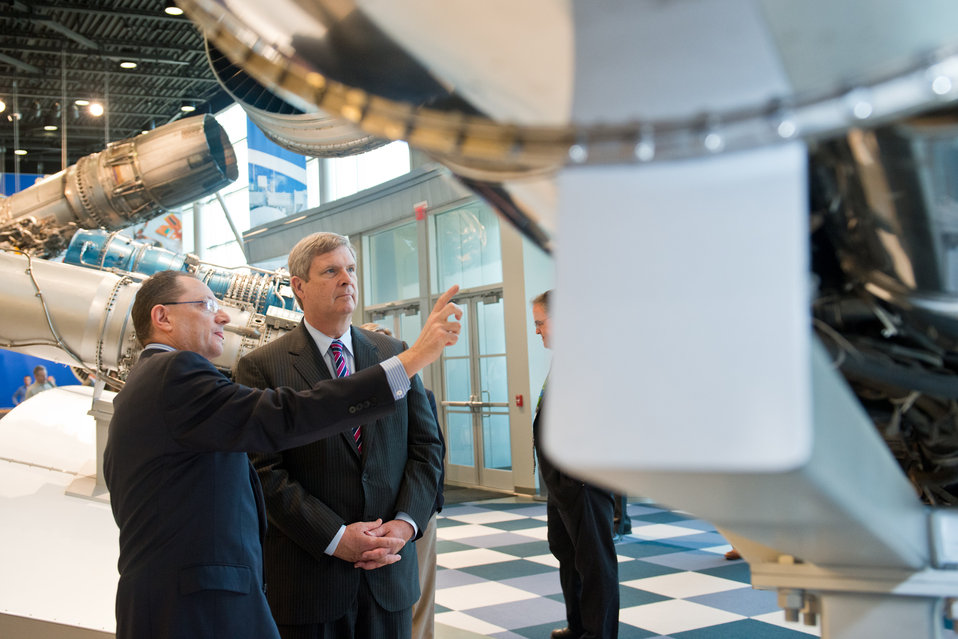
G.E. Aviation Marketing Executive Tom Lodge explains the mechanics of an early-model General Electric jet engine to Agriculture Secretary Tom Vilsack at the company’s Learning Centre in suburban Cincinnati, OH on Wednesday, June 27, 2012. Secretary Vilsack was in Ohio to highlight the U.S. Department of Agriculture’s (USDA) collaboration with the Ohio Aerospace Institute, air carriers and producer groups to develop a Midwest-regional approach to providing renewable jet fuel at G.E. Aviation’s Cincinnati-area facilities.